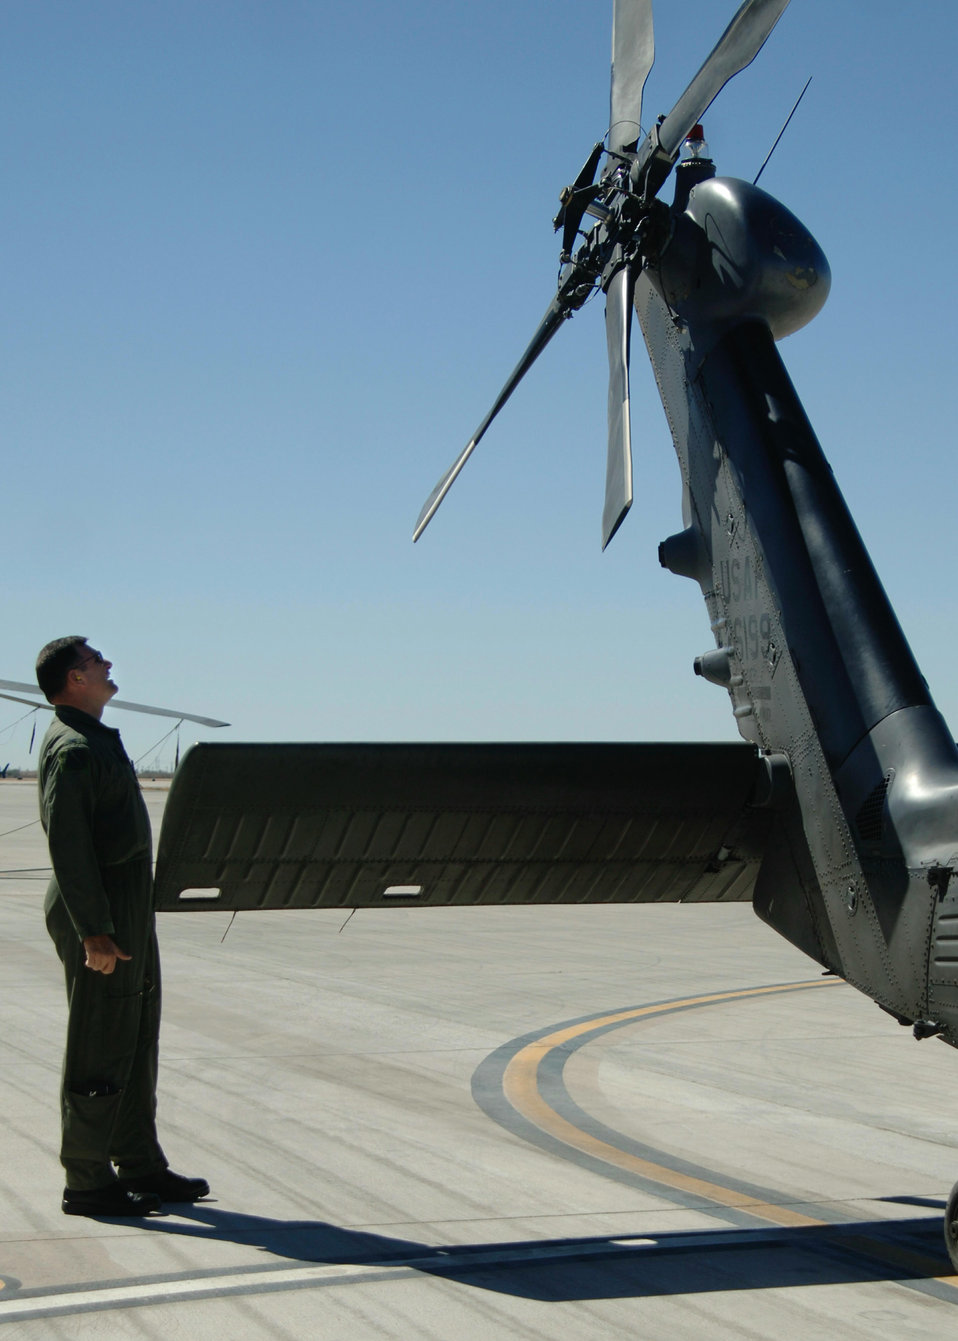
Insertion/extraction training

Col. Michael Korcheck performs pre-flight inspection checks before taking off in a HH-60 Pavehawk helicopter, Monday, March 13, 2006, at Davis-Monthan Air Force Base, Ariz. Colonel Korcheck flew with another HH-60 as training for the 55th Rescue Squadron and pararescuemen assigned to the 48th Rescue Squadron. Colonel Korcheck is the 563rd Rescue Group commander.